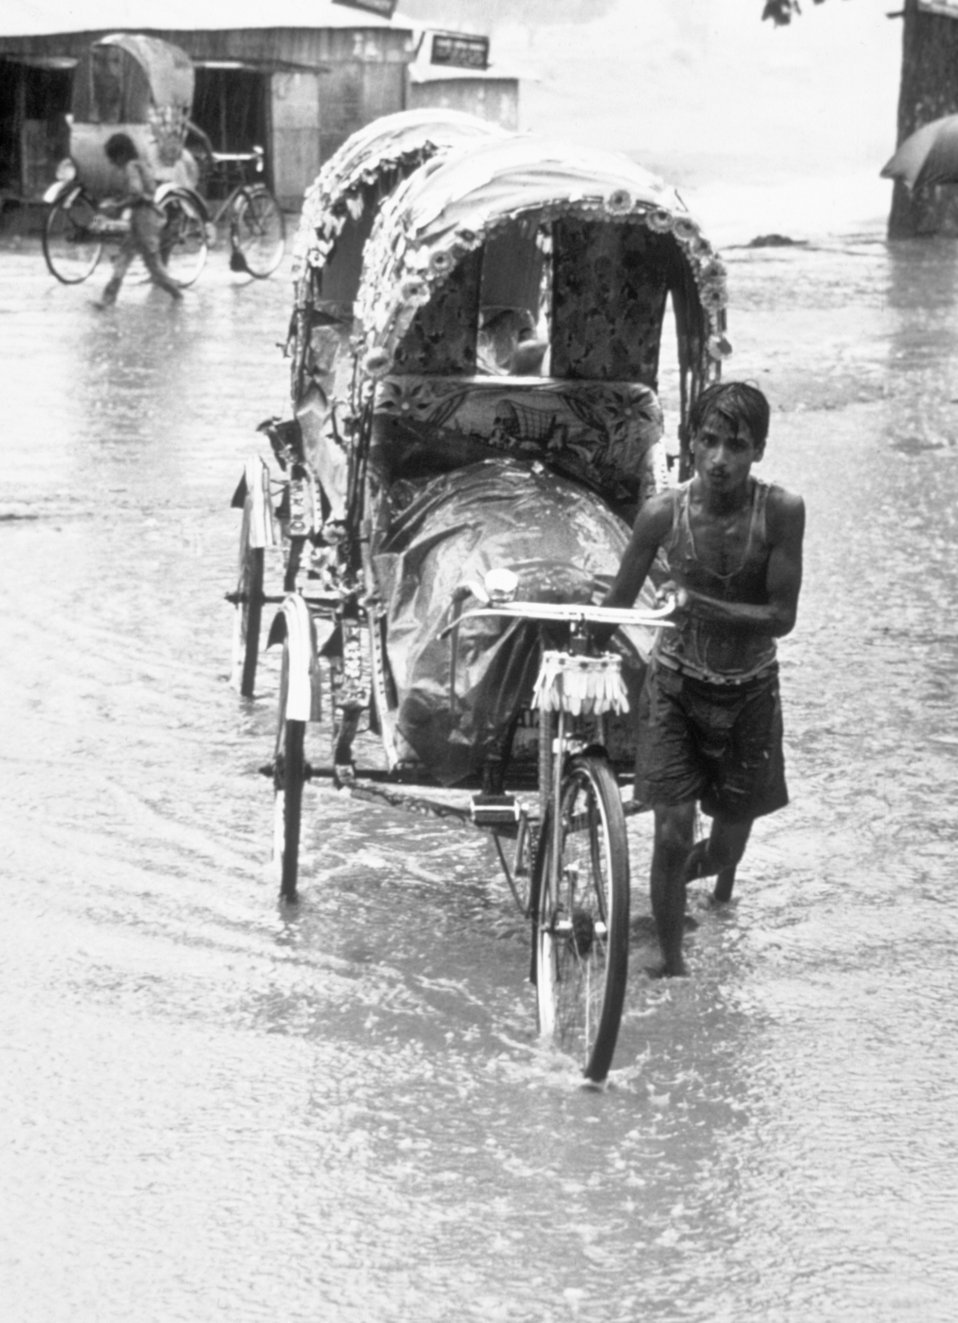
This photograph was taken during a 1974 cholera research and nutrition survey amidst floodwaters around Bangladesh.